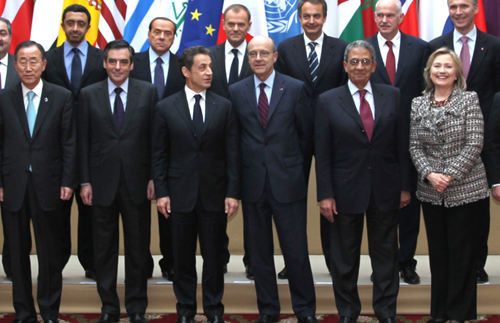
Secretary Clinton Poses for a Family Photo With World Leaders

U.S. Secretary of State Hillary Rodham Clinton poses for a family photo with world leaders at the crisis summit on Libya at the Elysee Palace in Paris, France, on March, 19, 2011.